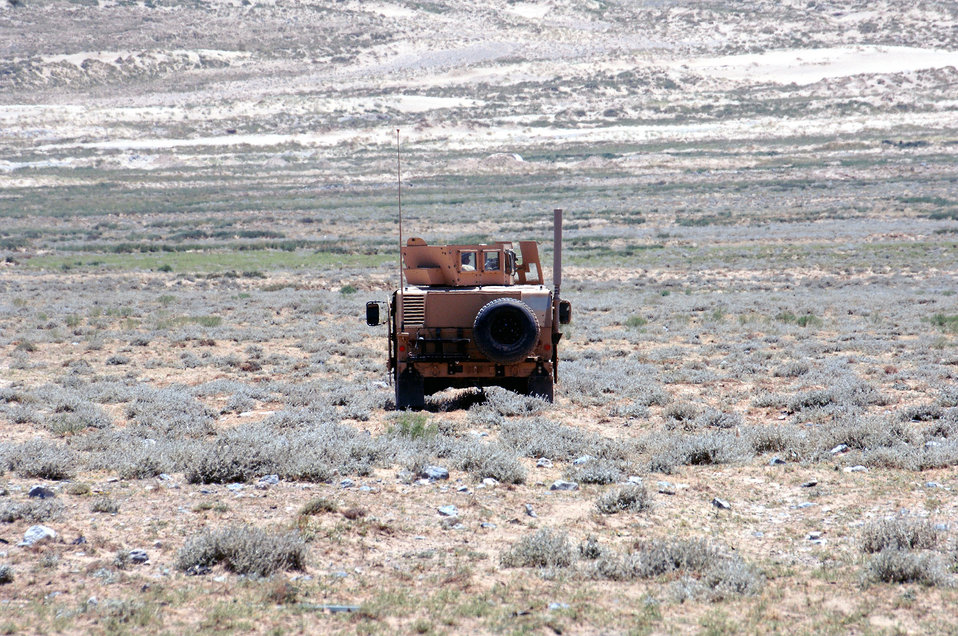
Training for convoy operations

A turret gunner from the 455th Expeditionary Security Forces Squadron keeps watch on his field of fire from his Humvee, providing a 360-degree security perimeter around an explosive ordnance disposal team's detonation site June 13 outside Bagram Air Base, Afghanistan.